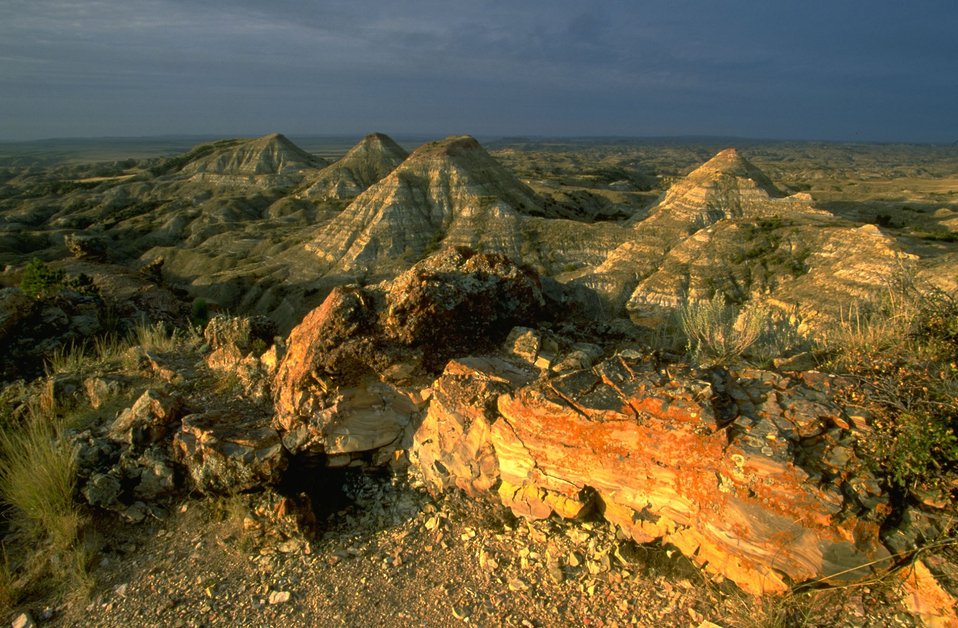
Sun shining on a cliff in the Terry Badlands